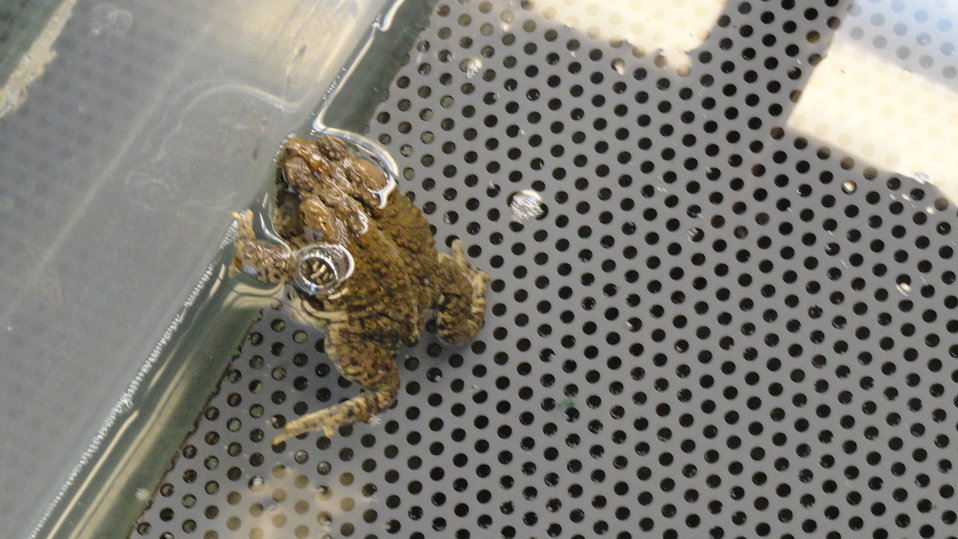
Visiting Saratoga National Fish Hatchery

In April of 2014, regional office employees visited Saratoga National Fish Hatchery to learn more about its efforts towards recovering the Wyoming toad (Bufo baxteri).

The hatchery adopted a unique role in becoming the first unit in the National Fish Hatchery System to become involved in rearing endangered amphibians. The Wyoming toad was a common sight on areas of the Laramie Plains, Albany County, Wyoming, into the early 1970s but the species' populations crashed in the mid-1970s. The Wyoming toad was listed as endangered by the U.S. Fish & Wildlife Service in January 1984. Found only in southwestern Wyoming, the Wyoming toad is considered the most endangered amphibian in North America. The hatchery maintains a captive population for breeding, rearing, and refugia, and the offspring from this program will be used for reintroduction efforts.